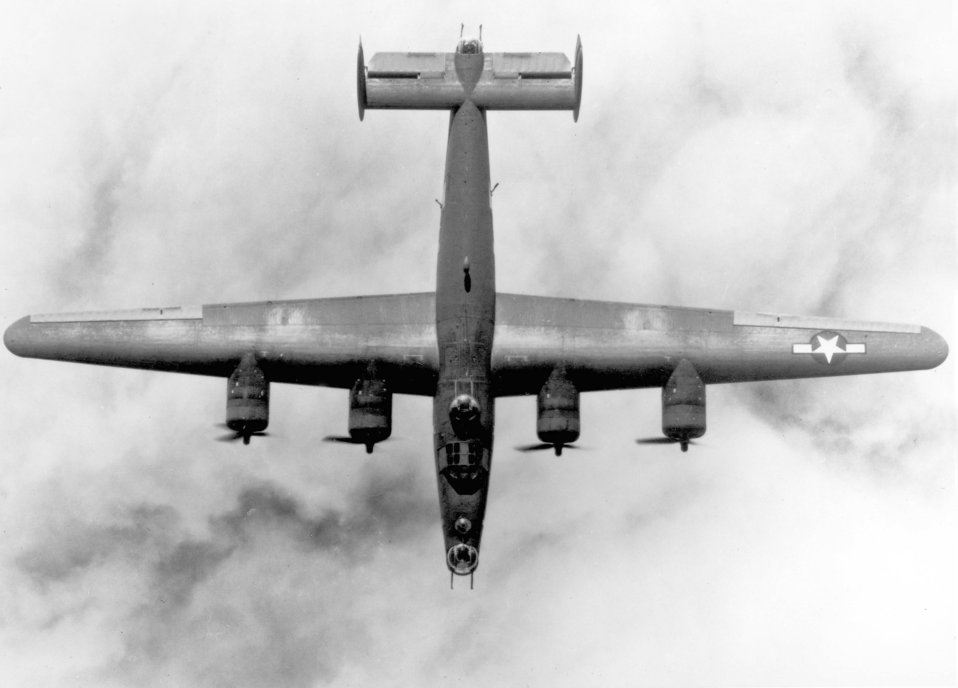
Consolidated B-24 Liberator

1940's -- The Consolidated B-24 Liberator was employed in operations in every combat theater during World War II. Because of its great range, it was particularly suited for long over-water missions in the European and Pacific Theater.